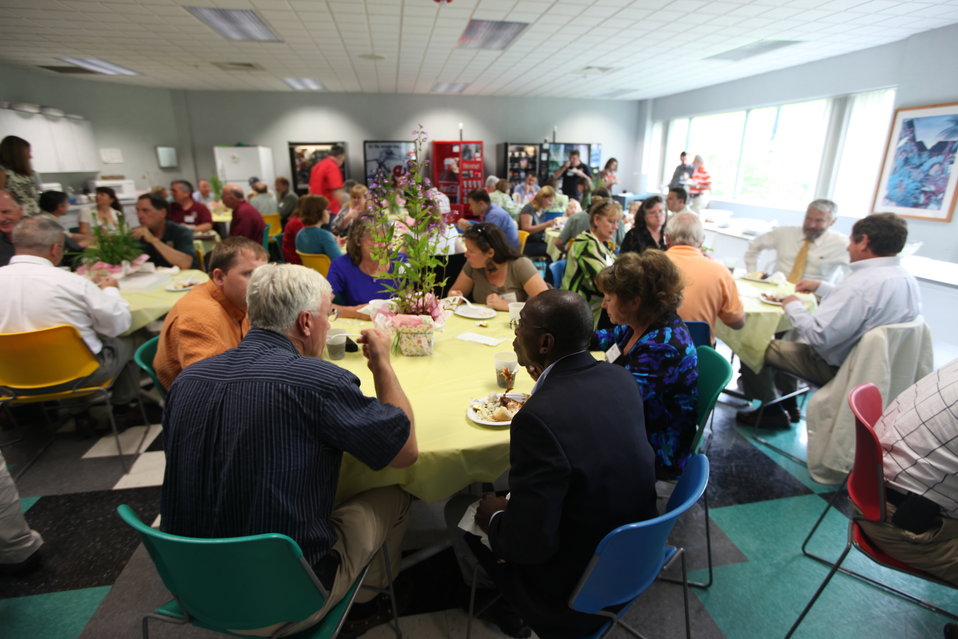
Northeast Region Employee Appreciation Awards

Award winners enjoying lunch before the awards